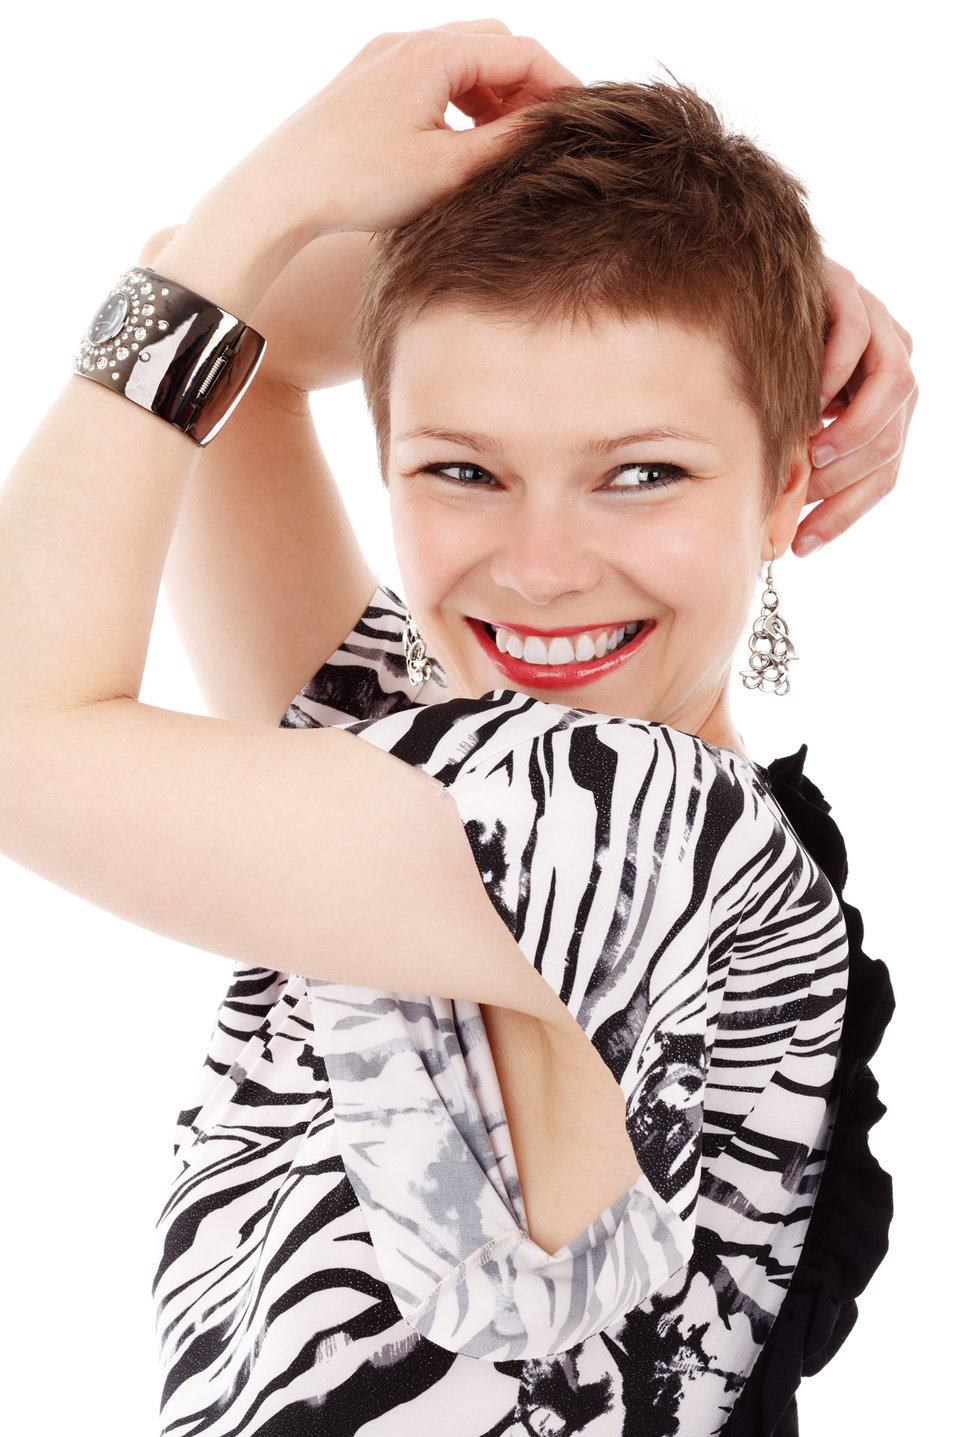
Fashion model smiling

Fashion model wearing black and white dress isolated on white background - jana svojsova.